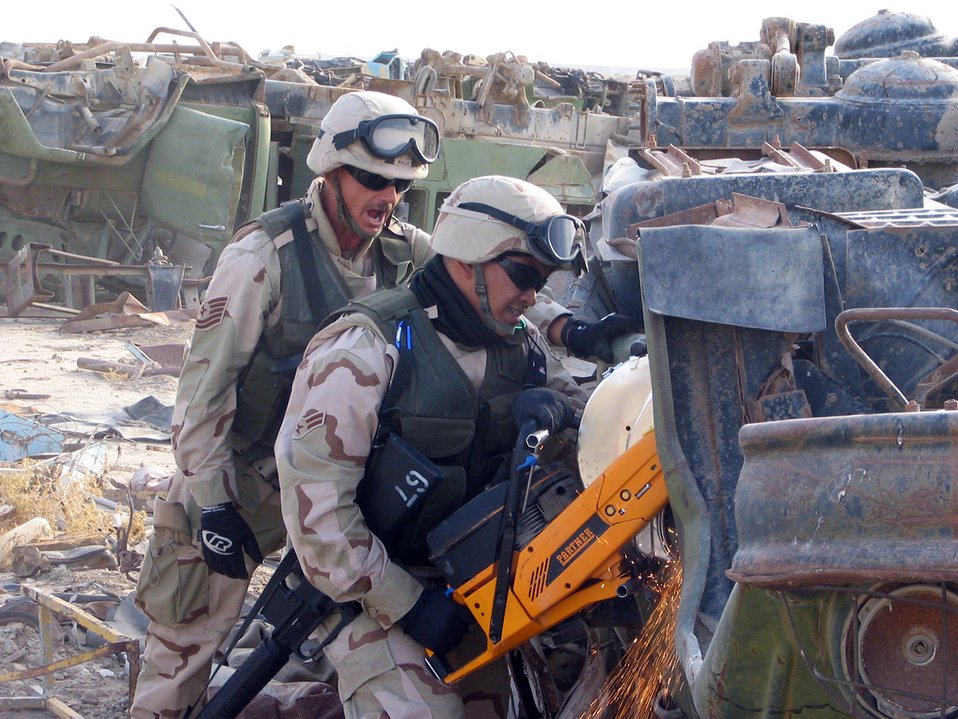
RAMS

ALI BASE, Iraq (AFPN) -- Airman 1st Class Christopher Cruz practices using a K-12 saw on the hinges of a vehicle as Tech. Sgt. James Ralls (left) looks on. Airman Cruz put his experience to use here when the rescue air mobility squad was called into action.